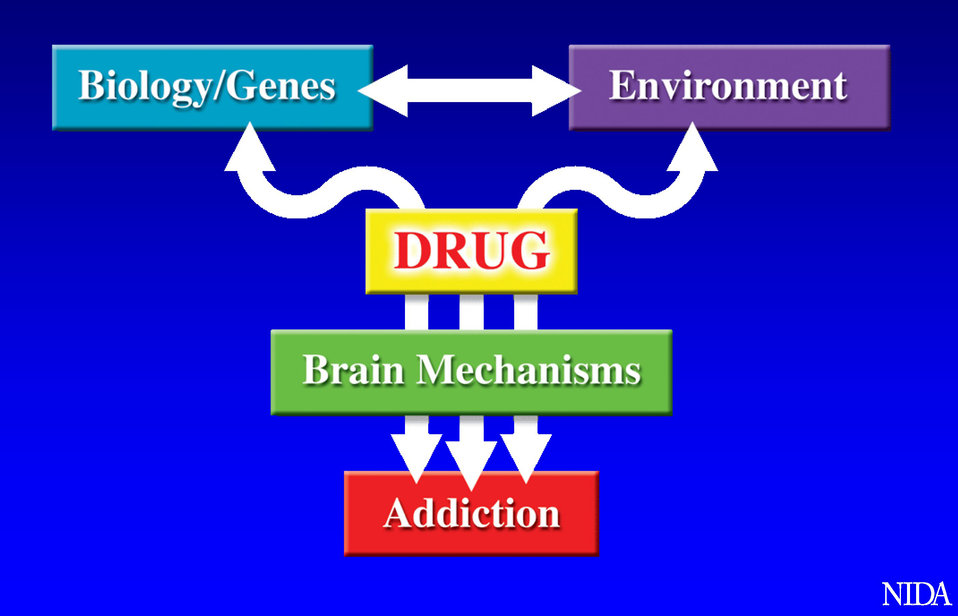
Addiction Factors

Addiction involves multiple factors